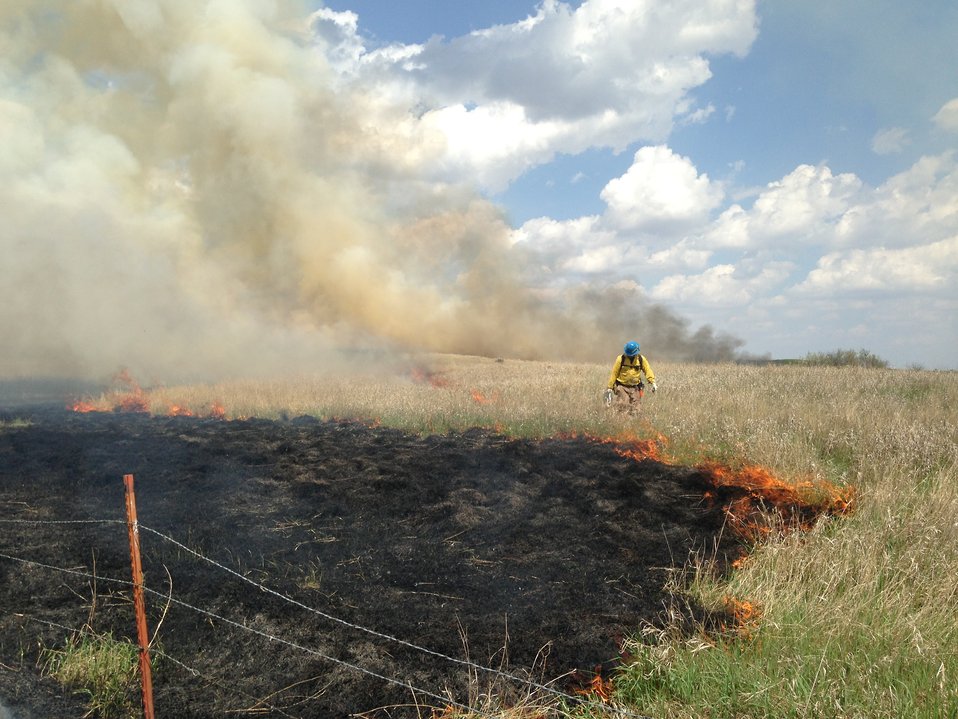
Firefighter Lighting a Prescribed Fire

In addition to fighting wildfires, trained wildland firefighters conduct prescribed burns for habitat management. Here, on the Kannowski Waterfowl Production Area of the Kulm Wetland Management District, a fire detailer ignites a line using a drip torch. This fire will consume the old, dead plant growth that is matted near the ground. By burning this litter layer, more sunlight reaches the ground. This additional sunlight, heat, and space provides room for new plant growth.